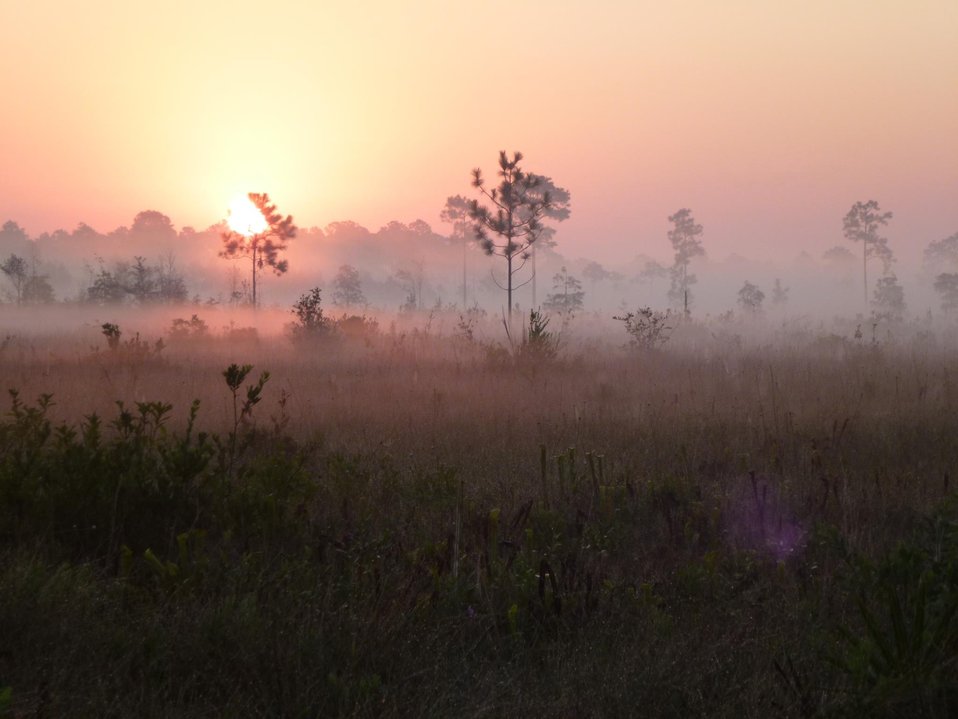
sunrise

Mississippi Sandhill Crane National Wildlife Refuge, MS